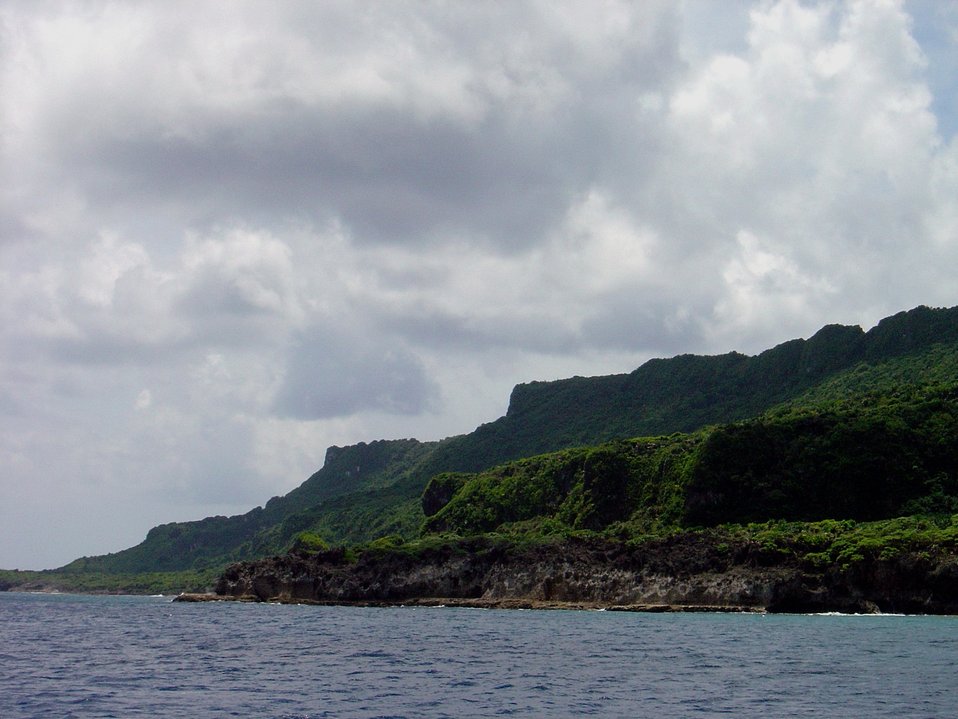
A series of wave-cut terraces in the coral rock of the Guam coastline.